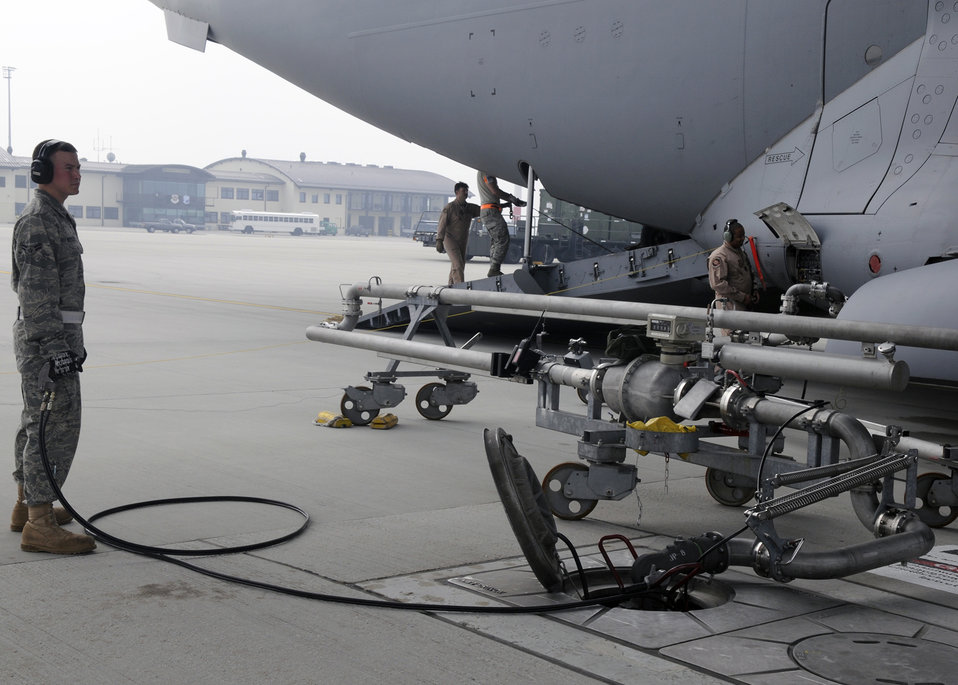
AFSO 21 helps unit reduce steps, increase proficiency

Airman 1st Class Adam Kessler assists in refueling a C-17 Globemaster at Spangdahlem Air Base, Germany, April 10. The 726th Air Mobility Squadron recently conducted an Air Force Smart Operations for the 21st Century value stream analysis, looking for ways to streamline C-17 refueling and increase proficiency levels. The team came up with 84 suggested technical order improvements, which they will submit through Air Force TO improvement channels. Airman Kessler is assigned to the 52nd Logistics Readiness Squadron.